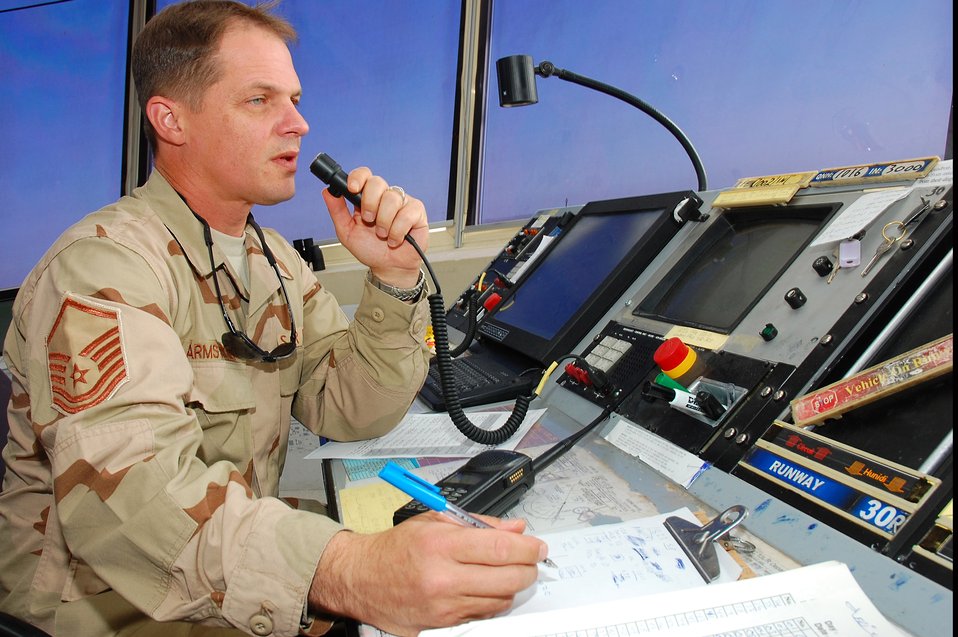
In control

Master Sgt. James Armstrong communicates with an inbound aircraft requesting landing clearance Nov. 2 in Southwest Asia. Sergeant Armstrong, the 386th Operations Group air traffic controller NCO in charge, is deployed from Royal Air Force Mildenhall, England.